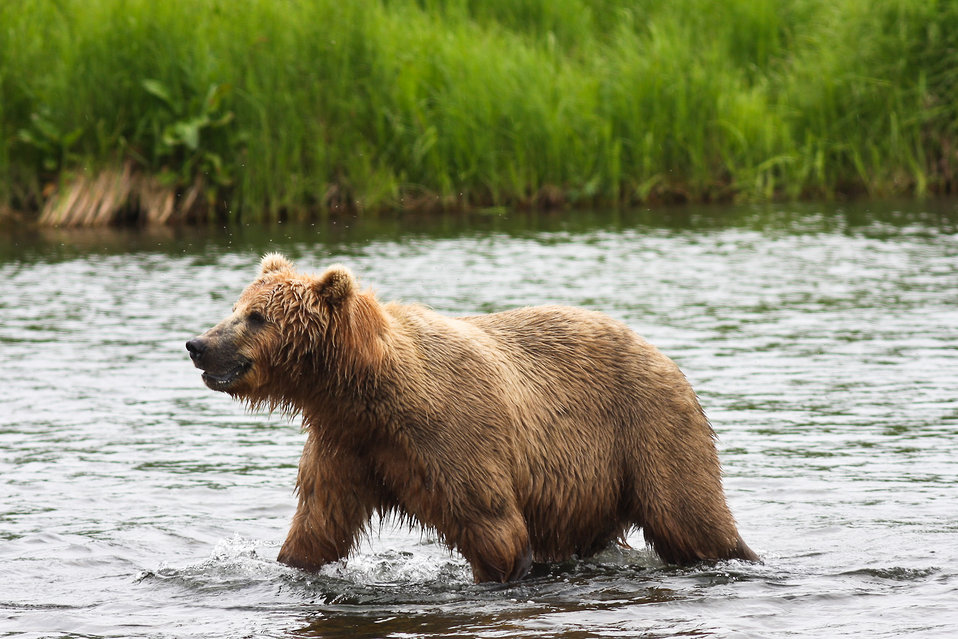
Fishing bear

Kodiak brown bear.
Lisa Hupp/USFWS